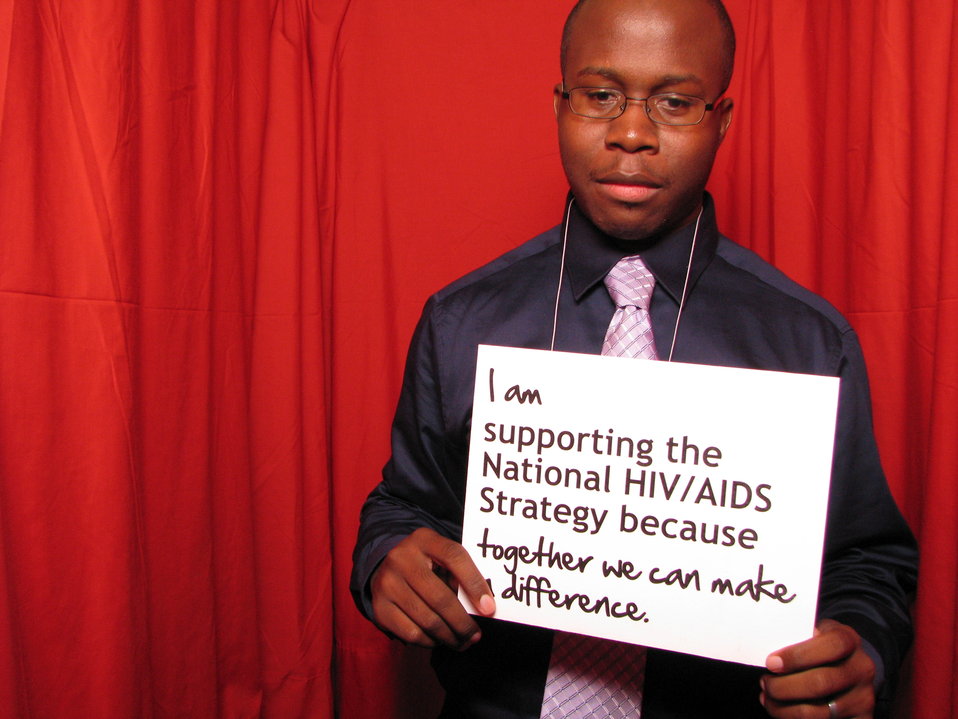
I am supporting the National HIV/AIDS Strategy because together we can make a difference.

From the AIDS.gov photo booth at the U.S. Conference on AIDS, September 2010 (Orlando, FL).